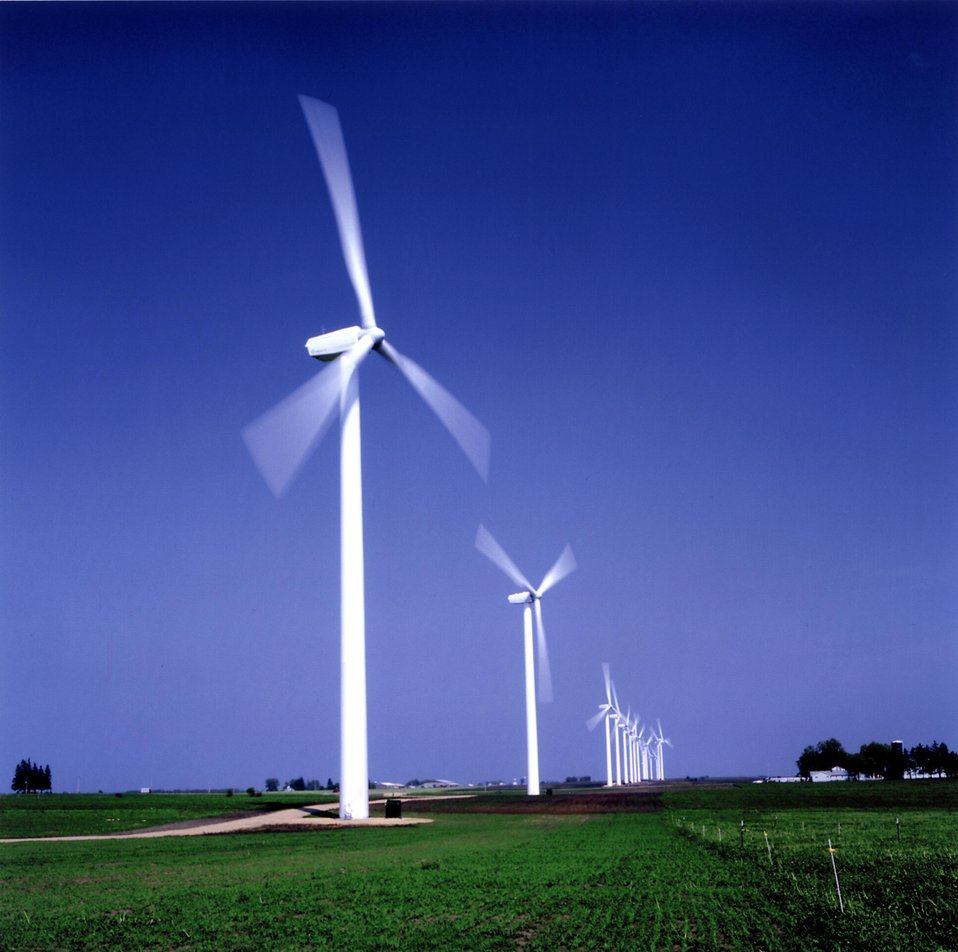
WIND ENERGY IN USE IN MONTFORD, WISCONSIN.